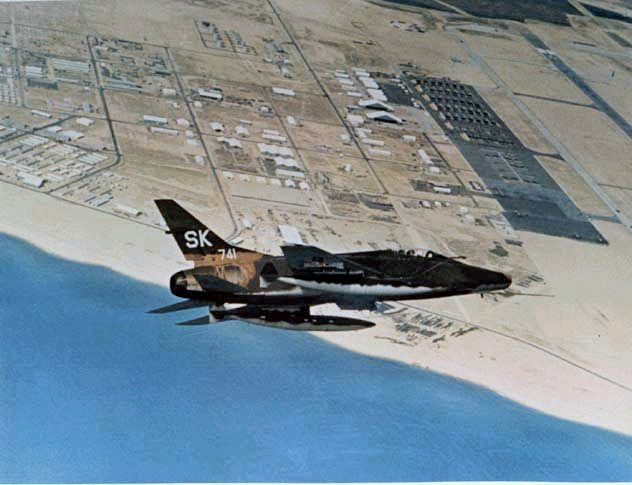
F-100 Super Sabre over Tuy Hoa, Vietnam

An F-100 Super Sabre flies over the base at Tuy Hoa, South Vietnam in 1967.